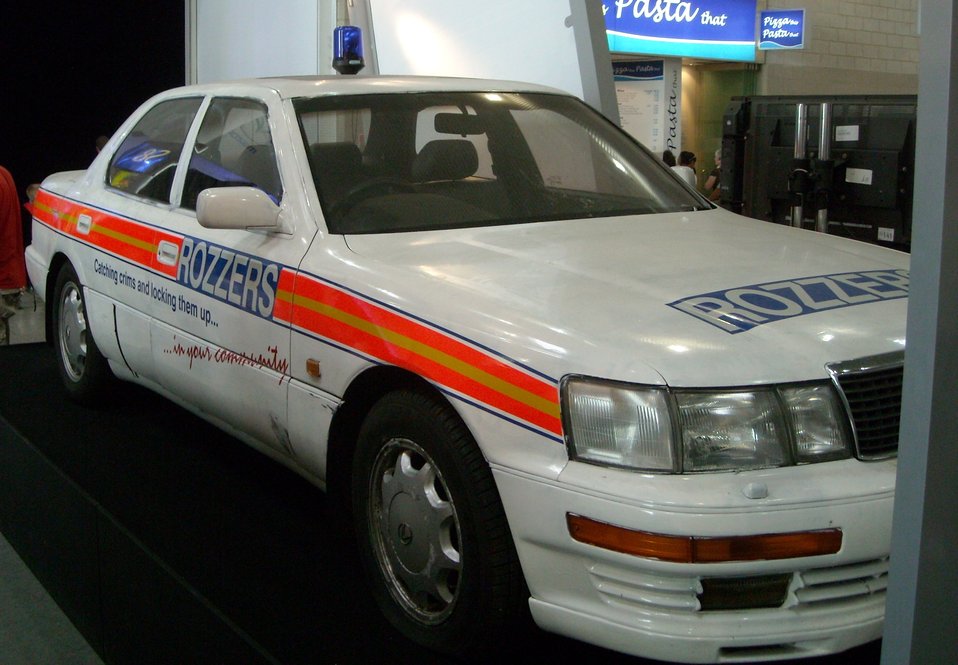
James May's Top Gear challenge to make a Police Car using a Lexus LS400